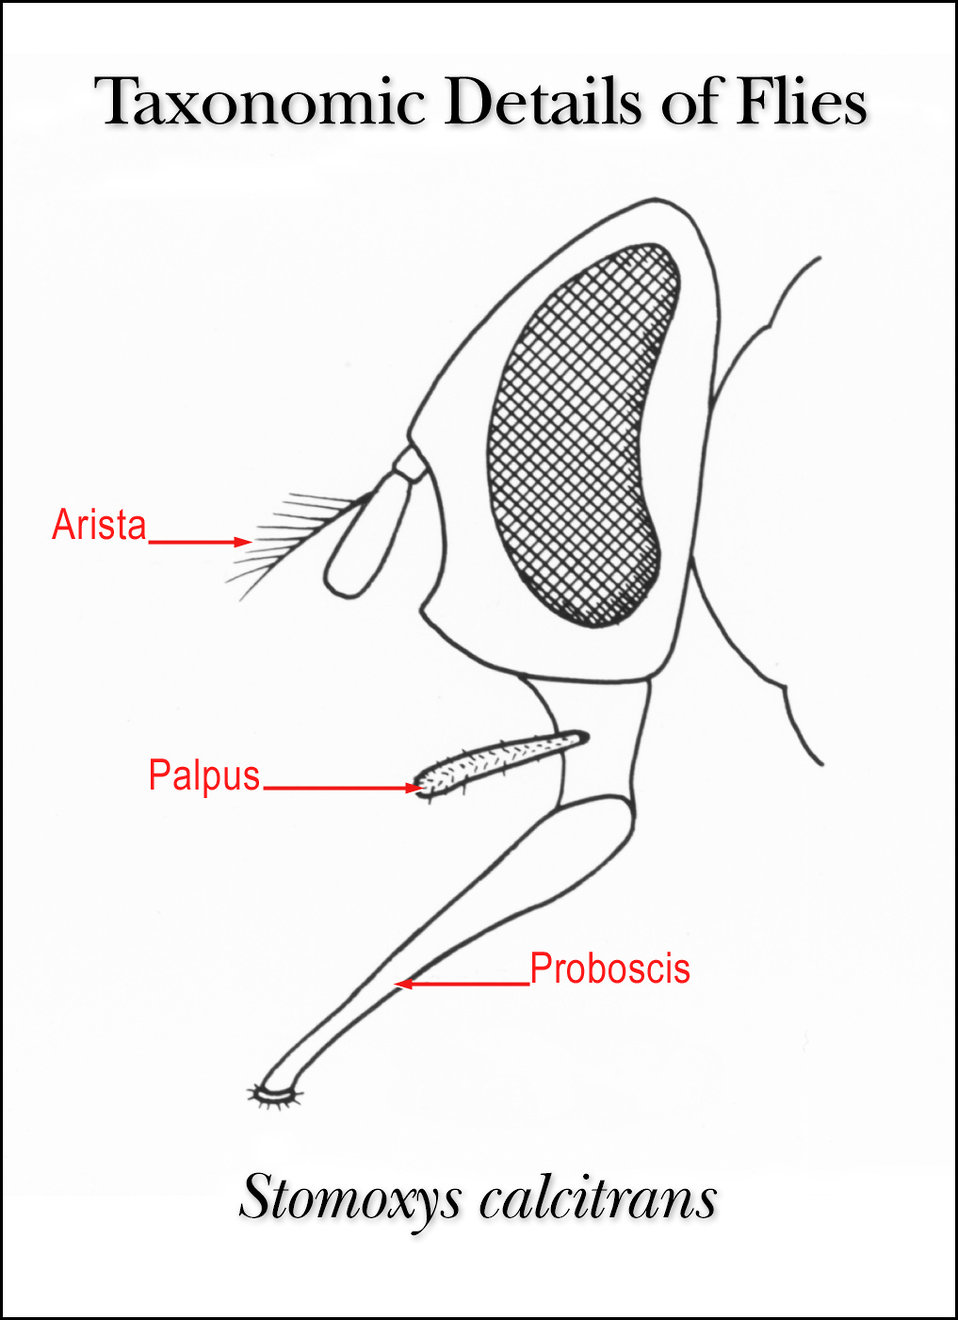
This illustration shows the taxonomic details in the head region of the fly Stomoxys calcitrans.